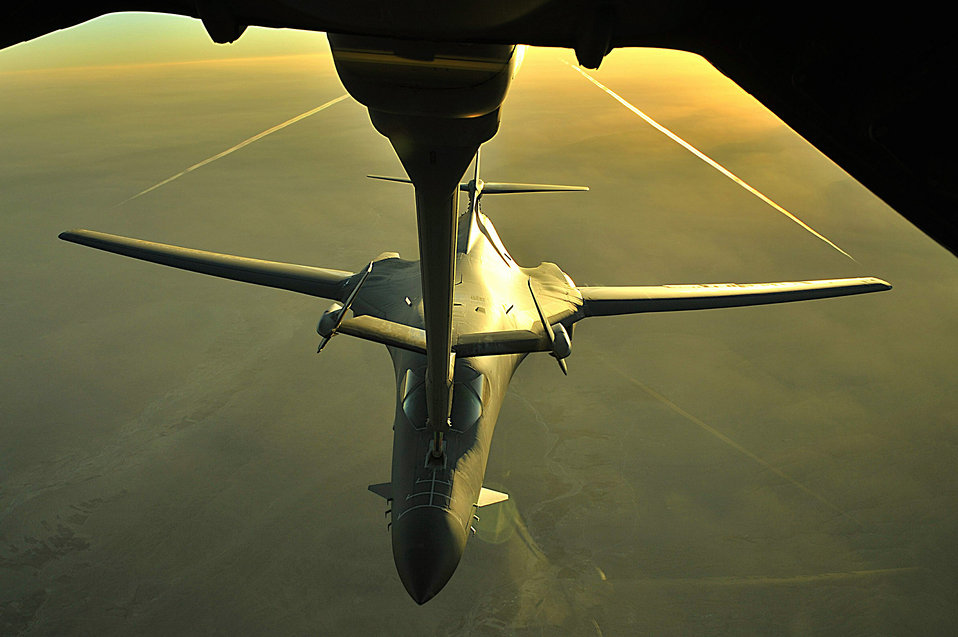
Nov. 20 airpower summary: B-1Bs deter insurgents

A B-1B Lancer receives fuel over Afghanistan from a KC-10 Extender. B-1Bs can rapidly deliver massive quantities of precision and non-precision weapons against any adversary. The B-1B is assigned to the 34th Expeditionary Squadron and the KC-10 is assigned to the 908th Expeditionary Aerial Refueling Squadron.